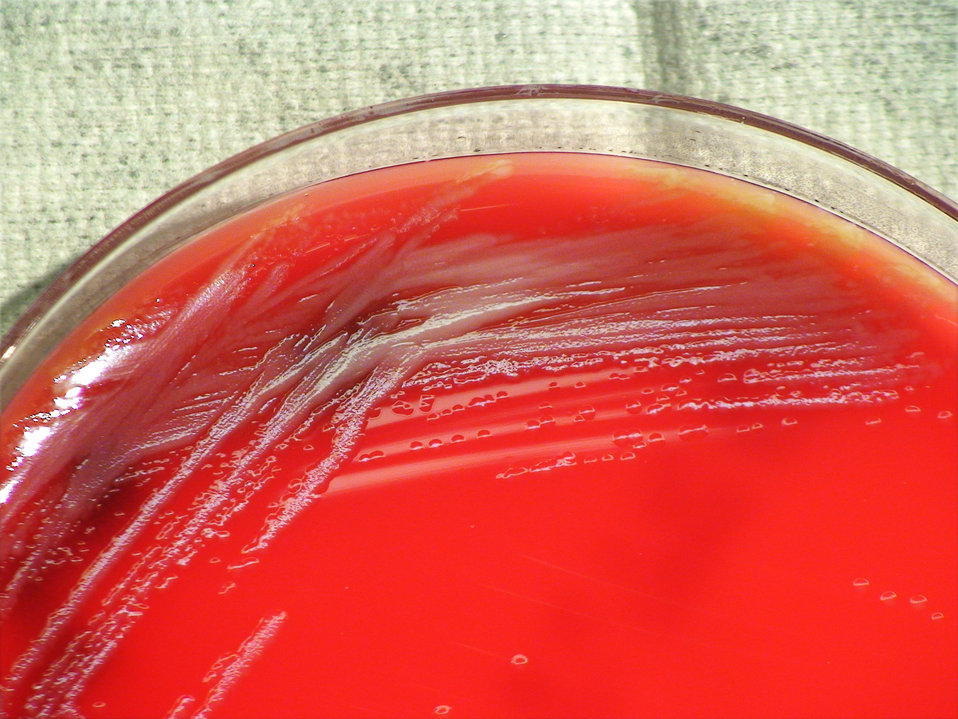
A closer view of PHIL 12431, this photograph depicts the colonial morphology displayed by Gram-negative Burkholderia thailandensis bacteria, which was grown on a medium of sheep's blood agar (SBA), for a 24 hour time period, at a temperature of 42�C. Also, see both PHIL 12401 and 12402, for views of this bacterial specie, grown on the same medium, but at a lesser temperature (37�C), and for twice the time (48hr). PHIL 12408 and 12409 also display B. thailandensis colonial growth on the same medium, but at the same temperature, however, at twice the time period (48hr). Finally, PHIL 12423 and 12424 display this specie's bacterial growth, again on SBA, and for the same amount of time (24hr), but at a lesser temperature (37�C).